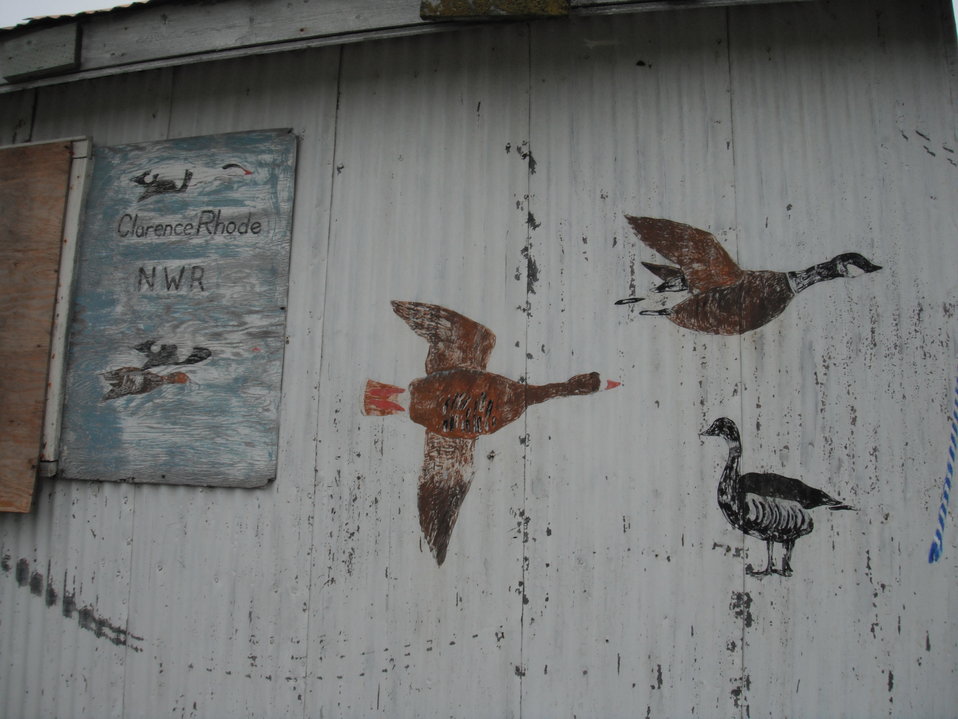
Art on the Delta

Church that is still standing at Old Chevak field camp. This artwork decorates the outside of the church.

USFWS Yukon Delta NWR